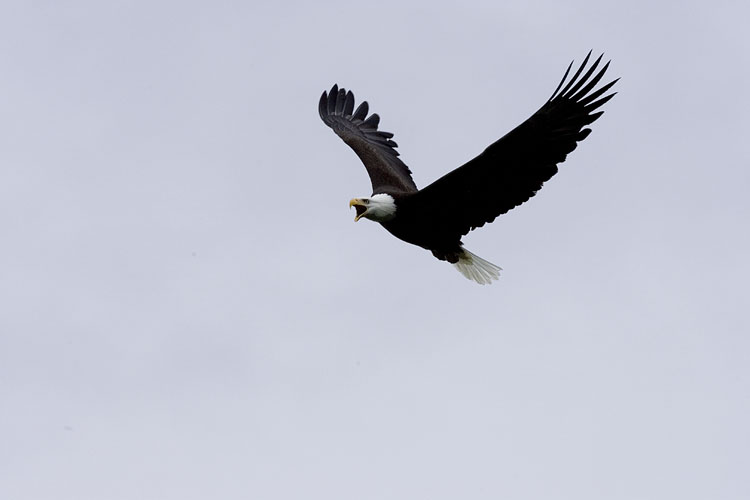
Wildlife of Kodiak Refuge

Bald Eagle